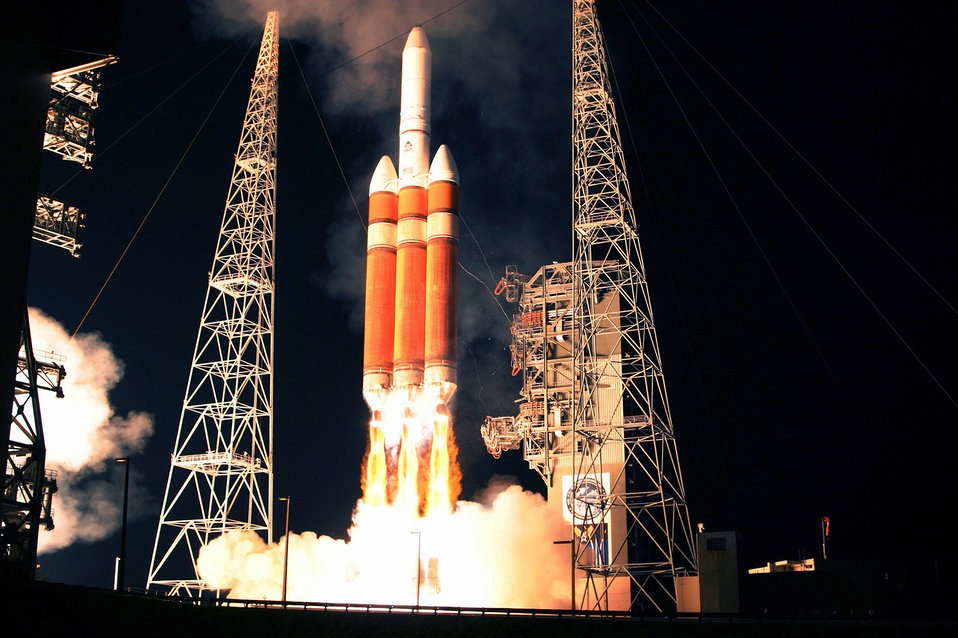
Delta IV PB

The 45th Space Wing launched a Delta IV Heavy Nov. 21, carrying a National Reconnaissance Office satellite.